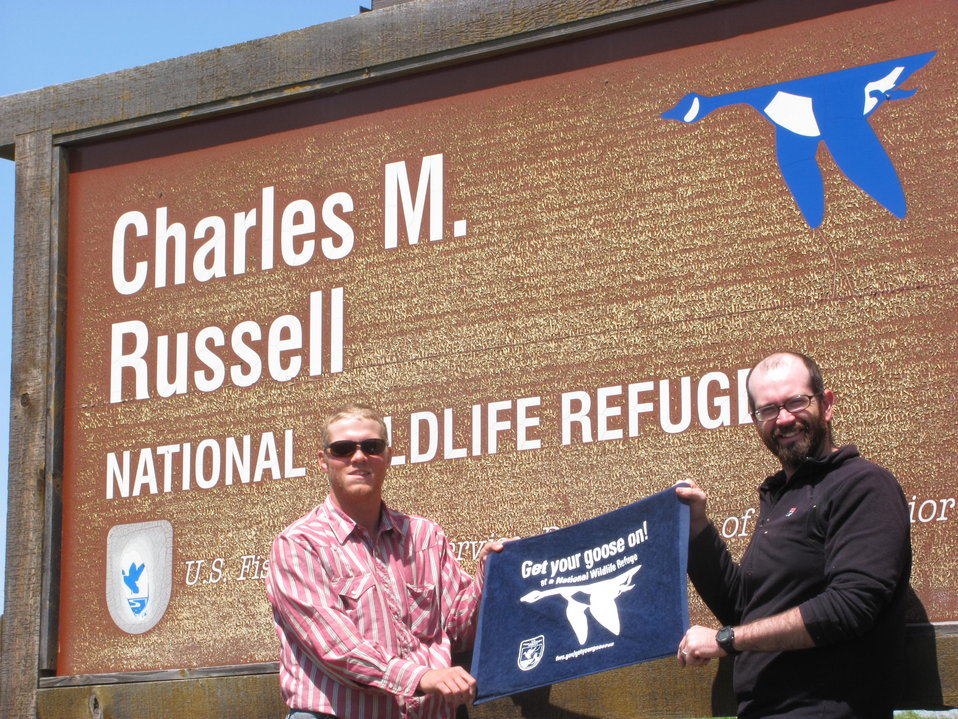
Get Your Goose On!

The Benton Lake National Wildlife Refuge traveling strike team Gets Their Goose On! at Charles M. Russell National Wildlife Refuge.